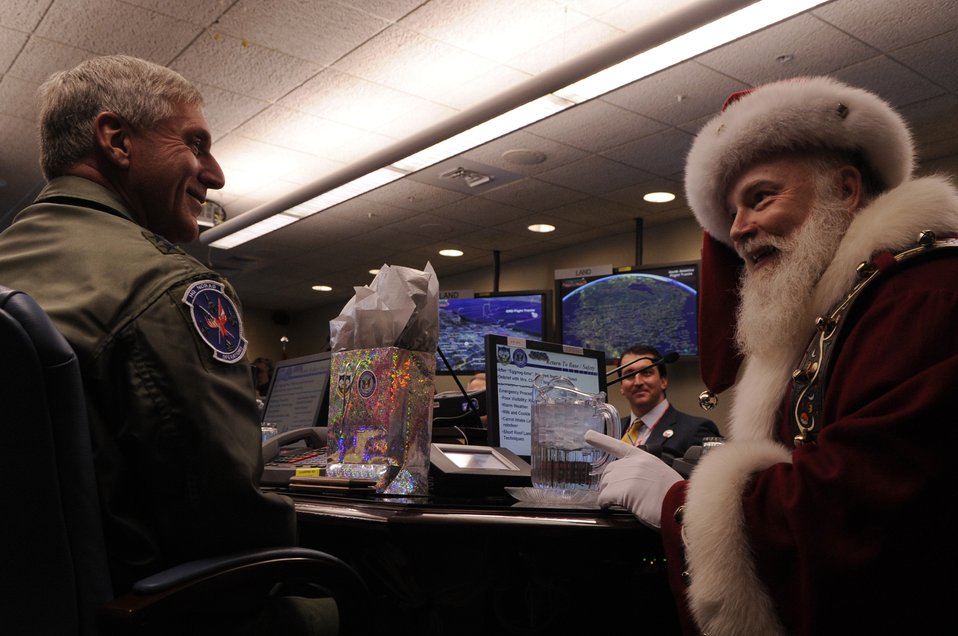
Santa Claus is coming to town

Santa Claus meets with Maj. Gen. John Borderlon Dec. 23 at Peterson Air Force Base, Colo., to discuss Santa's Christmas Eve flight. General Borderlon is the chief of staff for North American Aerospace Defense Command and Northern Command. Santa received Federal Aviation Administration, weather and air mission briefs.